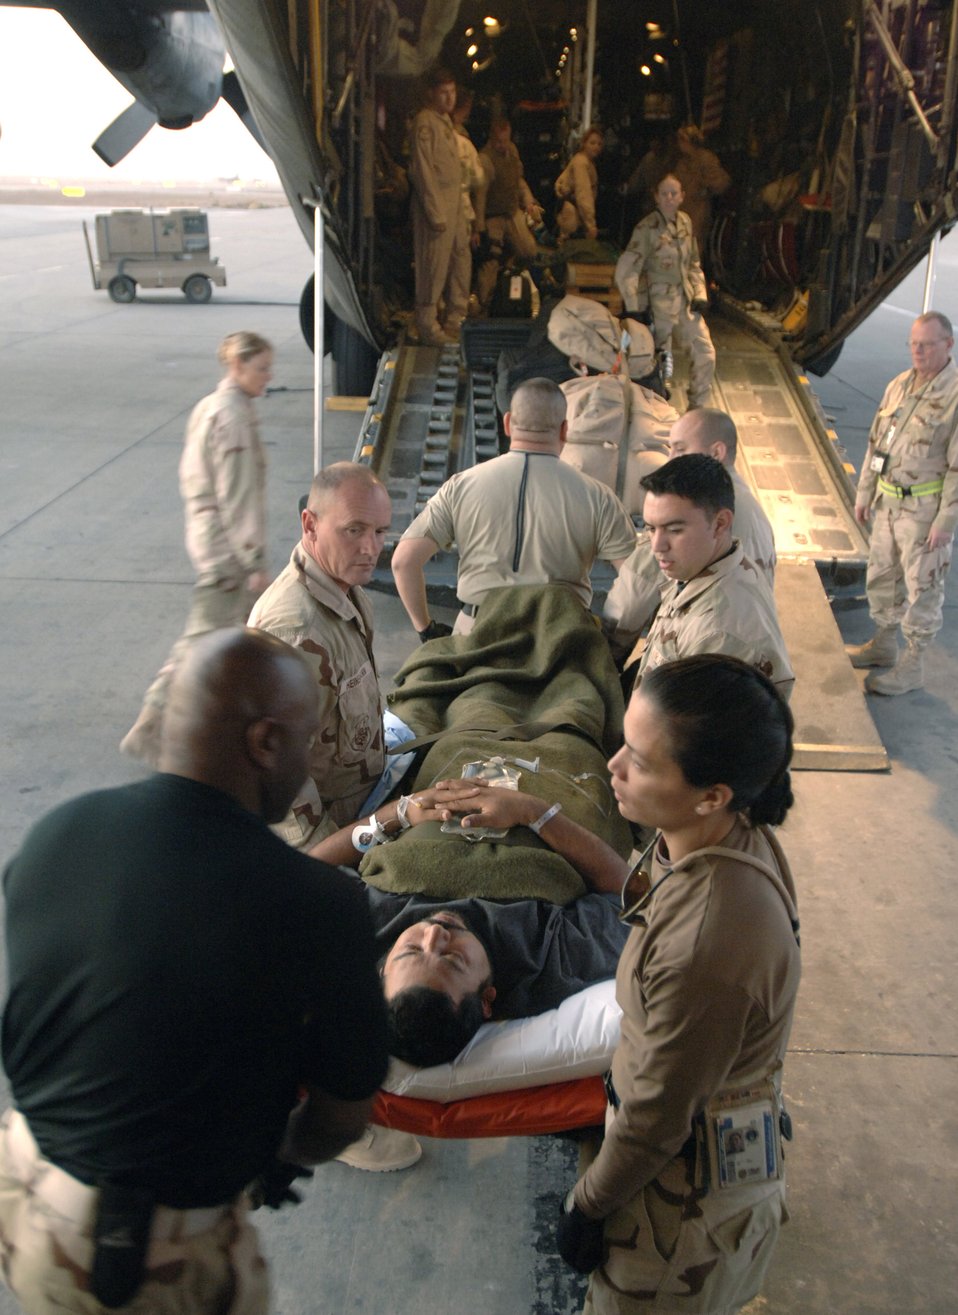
Aeromedical evacuation mission

Medics carry a U.S. civilian contractor onto a C-130 Hercules Nov. 22 at the 332nd Contingency Aeromedical Staging Facility during a temporary stop at Balad Air Base in Iraq.